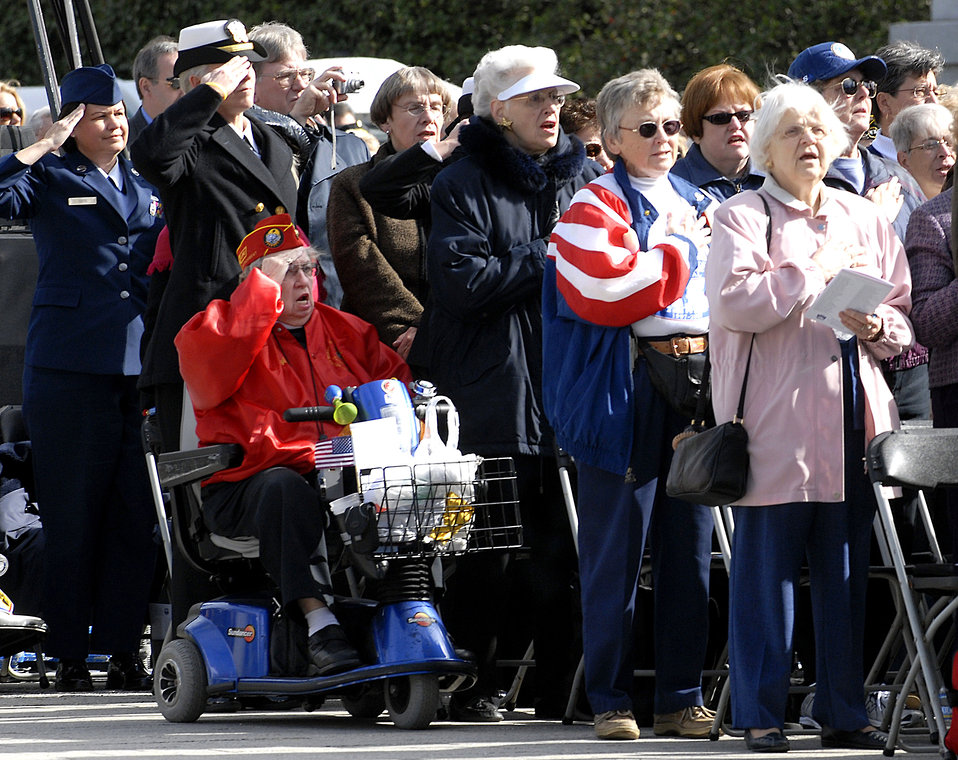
10th anniversary of WIMSA

Women veterans render honors during the singing of the national anthem by U.S. Army Staff Sgt. Leigh Ann Hinton at the ceremony Nov. 3 celebrating the 10th anniversary of the Women in Military Service for America Memorial at Arlington National Cemetery.